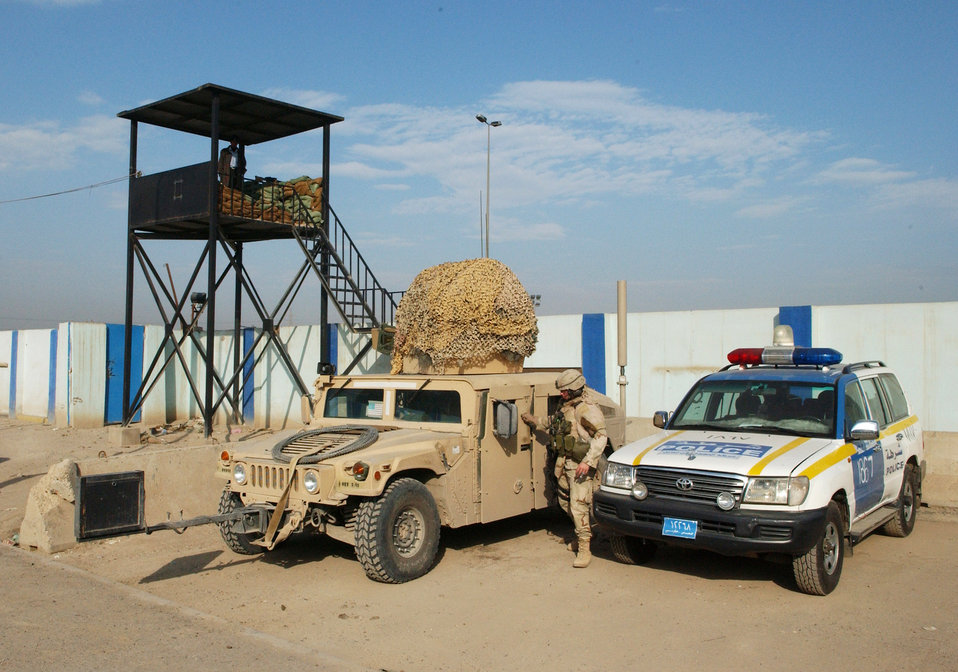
Street patrol

An Air Force high mobility multi-purpose vehicle arrives at the Hy Al-Amil station Nov. 23 in Baghdad, Iraq. Airmen from Detachment 7, 732nd Expeditionary Security Forces Squadron deploy into the city streets of Baghdad assisting Iraqi police in achieving self-sufficiency.